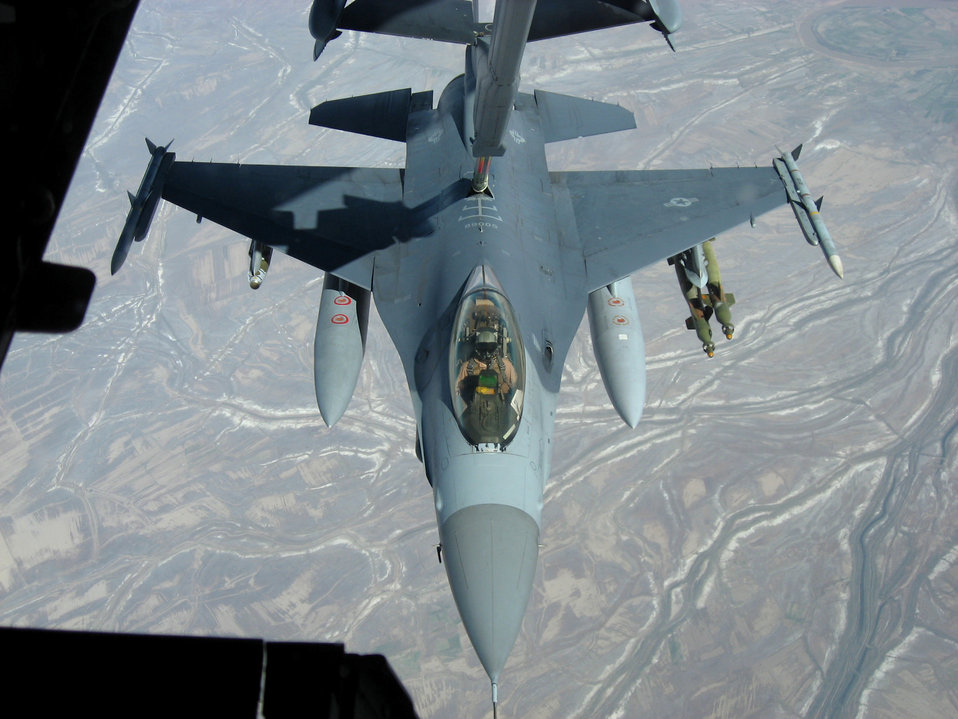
Refueling the fight

An F-16 Fighting Falcon from Balad Air Base, Iraq, takes fuel from a KC-10 Extender over Iraq Nov. 20. The KC-10 refueled two jets that afternoon in support of Operation Iraqi Freedom. The KC-10 aircrew is deployed in support of the 380th Air Expeditionary Wing.